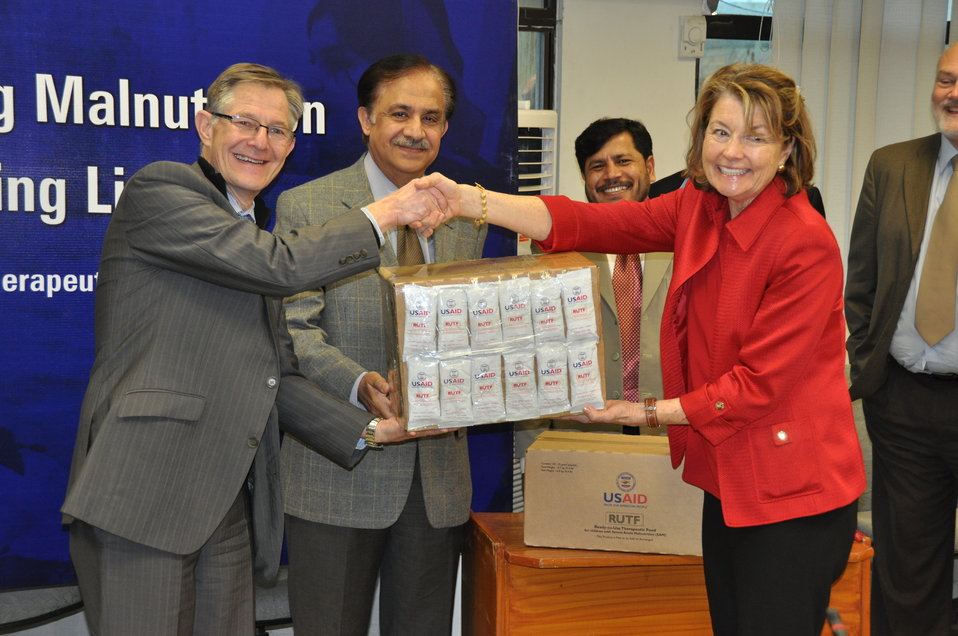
Handover of RUTF 01

USAID Deputy Mission Director Nancy Estes presented 1,330 metric tons of Ready to Use Therapeutic Food to UNICEF Pakistan Country Director Dr. Dan Rohrmann. Mr. Imtiaz Inayat Ellahi, Federal Secretary, Ministry of National Health Services, Regulation and Coordination, was also present at the occasion.